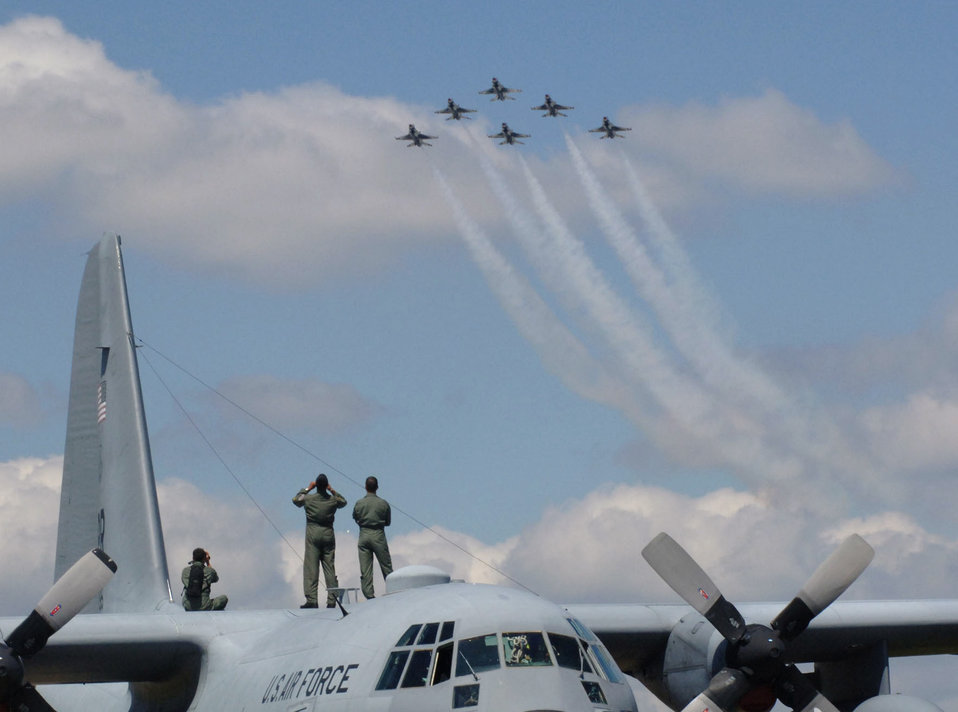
Aircrew's view

GUATEMALA CITY, Guatemala -- A C-130 Hercules aircrew from the Puerto Rico Air National Guard watch as the Thunderbirds streak by during the Guatemalan International Air Show 2005. The C-130 was part of the U.S Air Force team supporting the show.